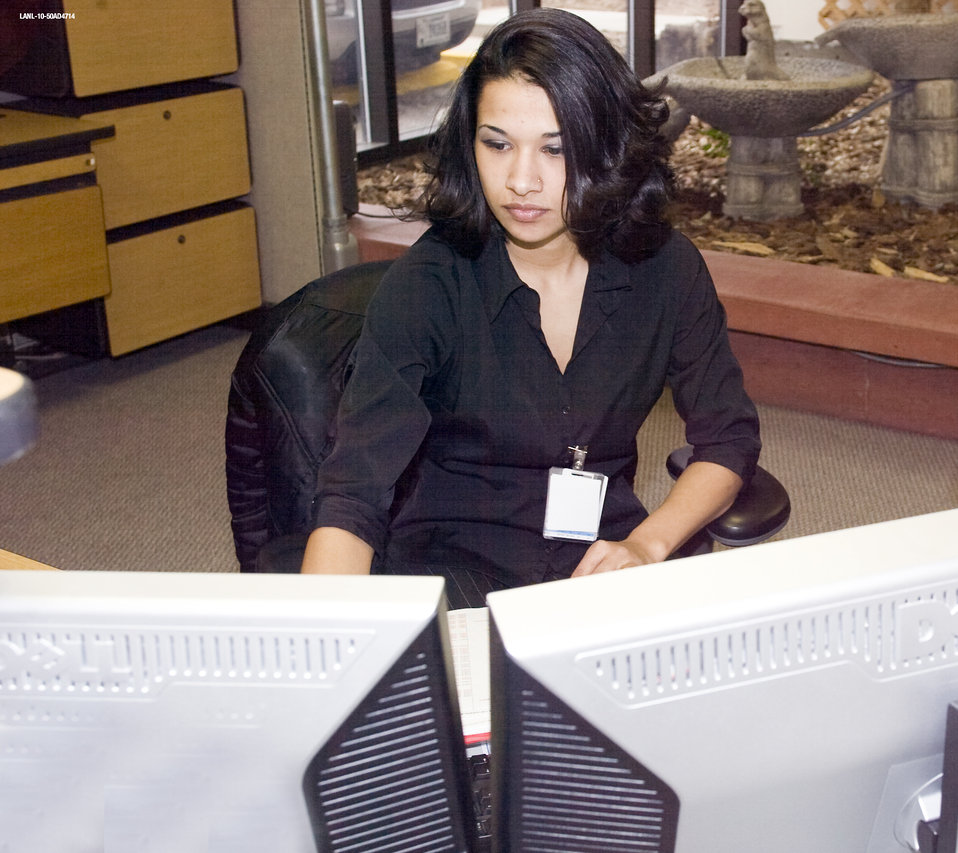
LANL - Christine Salazar

Christine Salazar was thrilled when she received the phone call offering her a position in the Recovery Act project office at Los Alamos National Laboratory (LANL). A New Mexico native reared in the tiny town of Coyote in the northern part of the state, Christine joined the Recovery Act project as an administrative assistant in August 2009, fresh from two weeks of training in the National Guard.
Since then, this 24-year-old dynamo has learned skills she can use in the future, and been instrumental in the project start-up process.